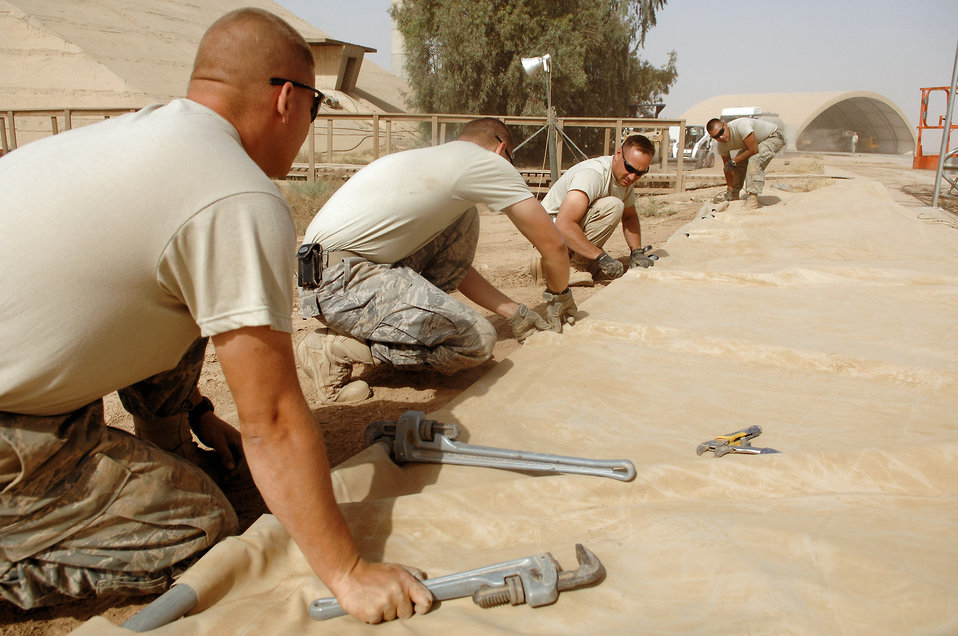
Under the big top

Airmen from the 332nd Expeditionary Civil Engineer Squadron structural engineer shop piece together a big top shelter that will be used to house aircraft May 7 at Balad Air Base, Iraq. The shelter will keep Air Force assets protected from the elements.